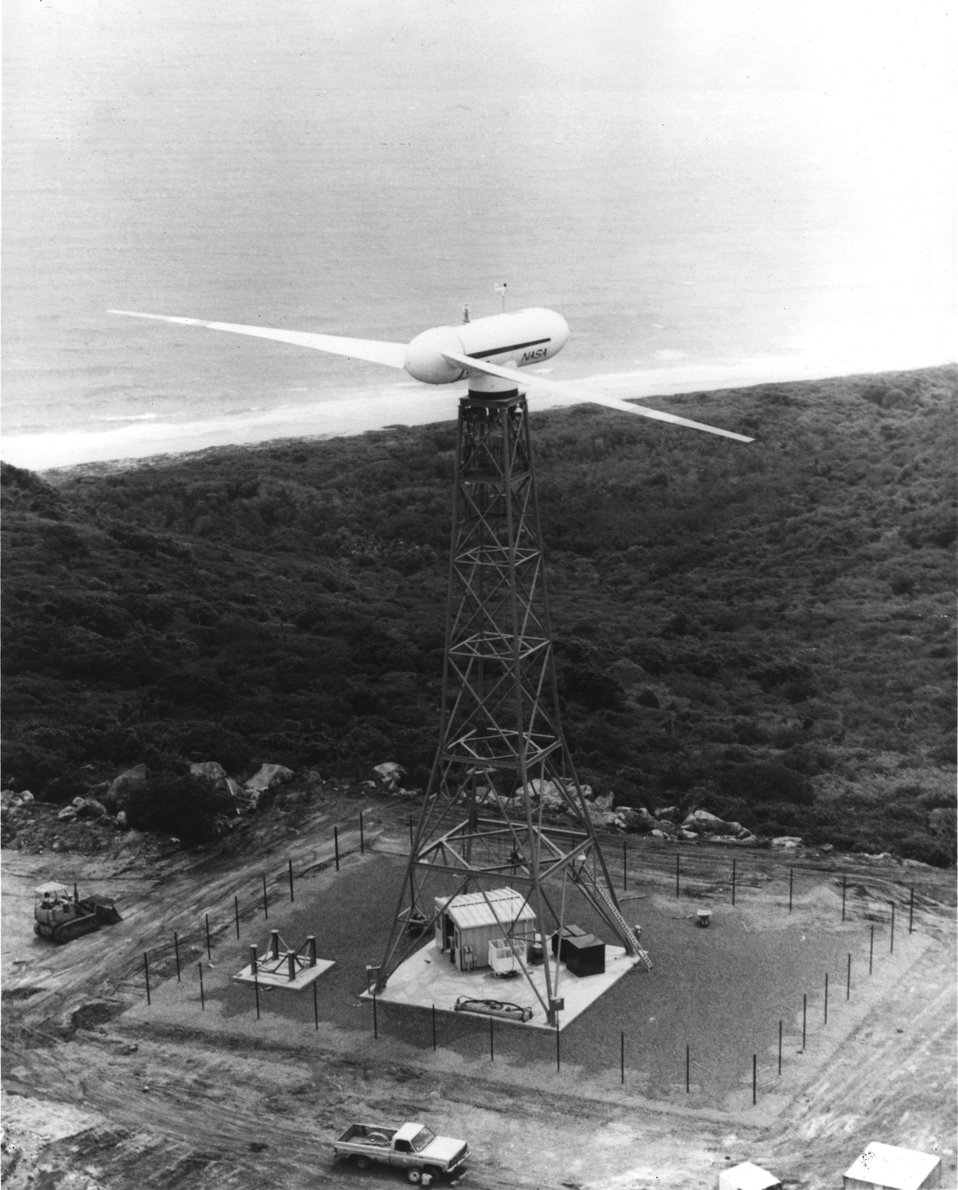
A large modern wind turbine generator is being field tested on Culebera Island, Puerto Rico for the Department of Energy and the National Aeronautics and Space Administration. c. 1978